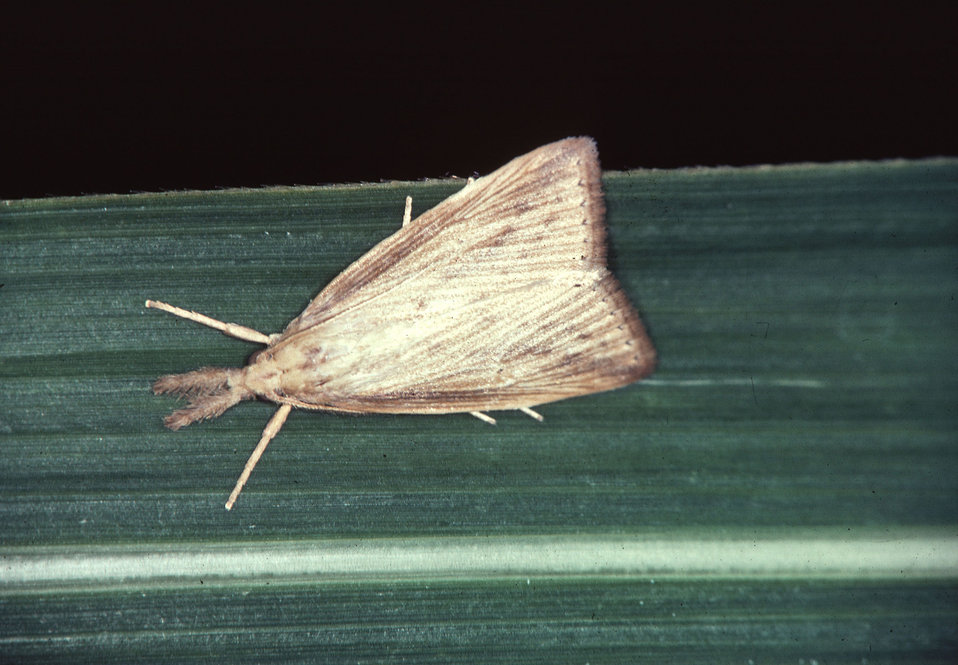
An adult stage of the sugarcane borer (Diatraea saccharalis) sits on a cane leaf.